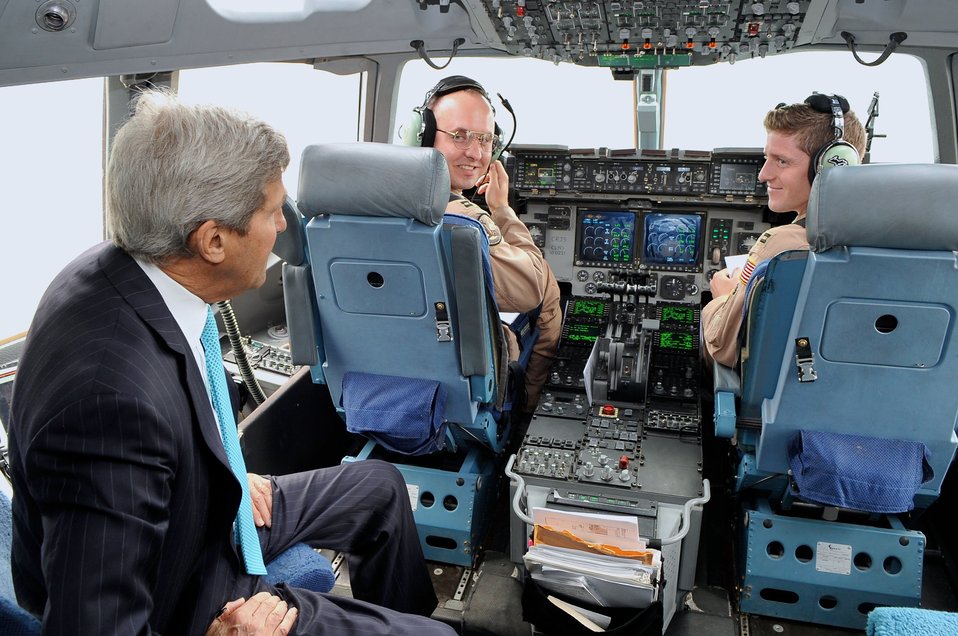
Secretary Kerry Chats With Pilots of C-17 Flying Him to South Sudan

U.S. Secretary of State John Kerry chats with the pilots of an Air Force C-17 plane that flew him from Addis Ababa, Ethiopia, to Juba, South Sudan, on May 2, 2014.